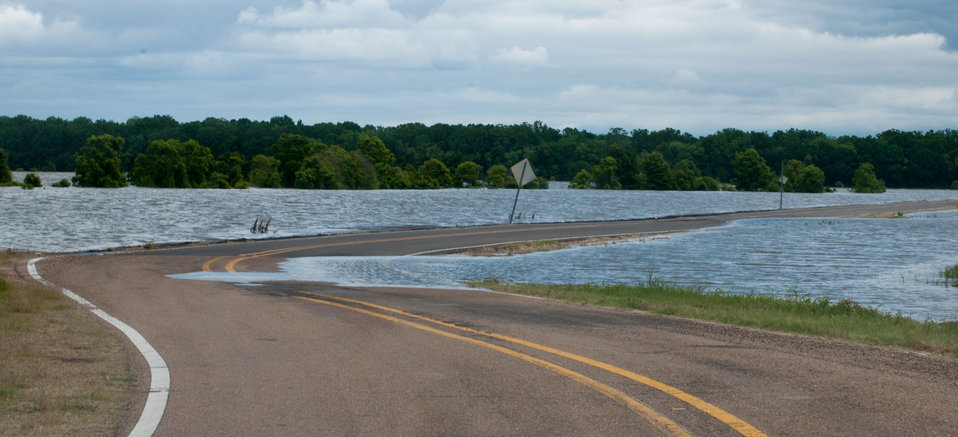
Slowly the water crests the roadways and official have begun to close roads as needed.